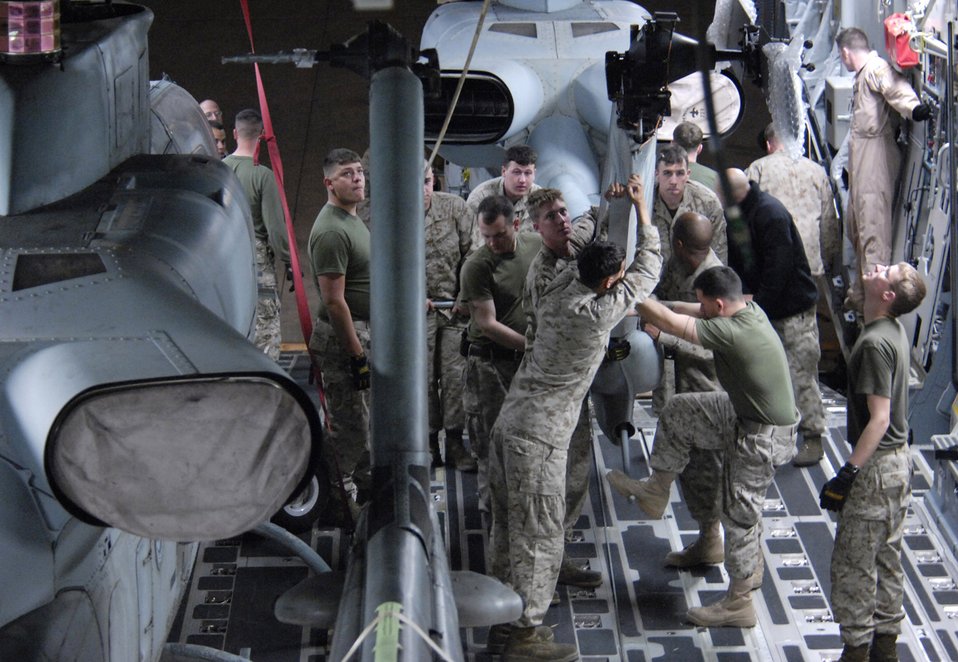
Marines move through Manas Air Base

Marines with the 24th Marine Expeditionary Unit load three AH-1W Super Cobra helicopters onto an Air Force C-17 Globemaster III March 16 at Manas Air Base, Kyrgyzstan. The Marines are headed downrange to Afghanistan as part of the troop plus-up authorized by the president in January. The Marines will be a part of the NATO-International Security Assistance Force, conducting operations to extend the authority of the Government of the Islamic Republic of Afghanistan.